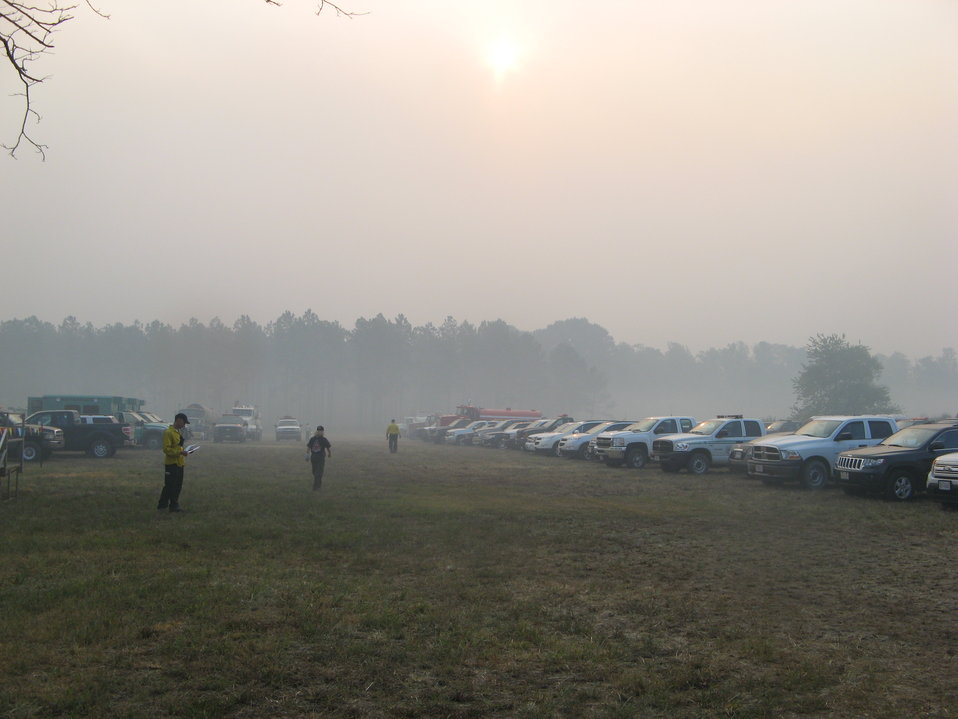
Smoky morning

Suffolk, VA, August 2011: Fire personnel prepare for the day in the parking lot of the Lateral West Fire command post at Great Dismal Swamp National Wildlife Refuge.